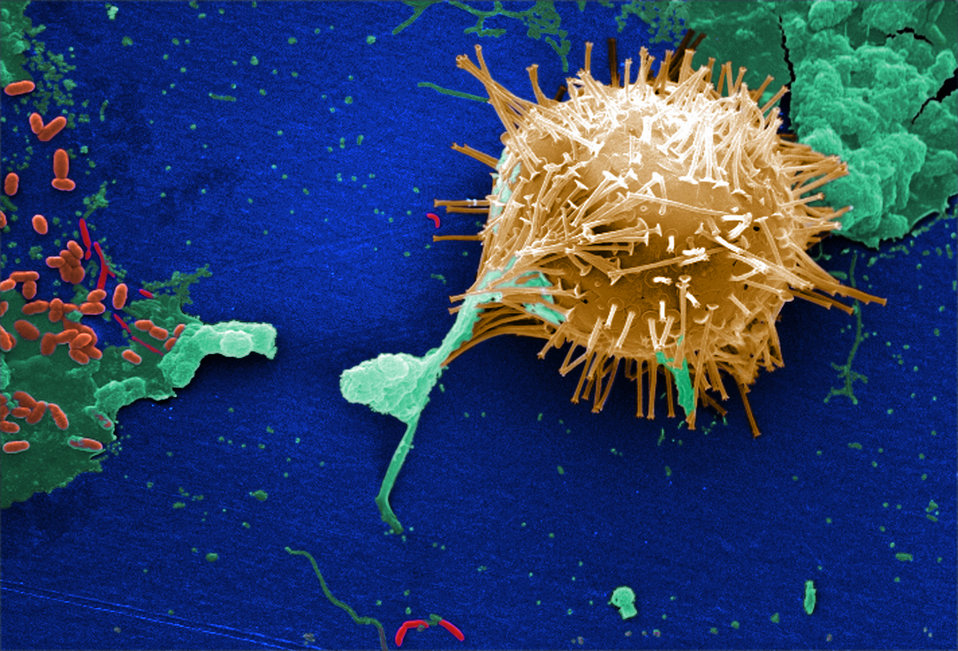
This digitally-colorized scanning electron micrograph (SEM) of an untreated water specimen extracted from a wild stream mainly used to control flooding during inclement weather, revealed the presence of unidentified organisms, which included bacteria, protozoa, and algae. In this particular view, a microorganism is featured, the exterior of which is covered by numerous projections imparting an appearance of a sea urchin. This microscopic 'pin cushion' was tethered to its surroundings by a biofilm within which many bacteria, and amoeboid protozoa could be seen enmeshed as well. See PHIL 11683 and 11684, for subsequent views of this creature under successively greater magnifications.